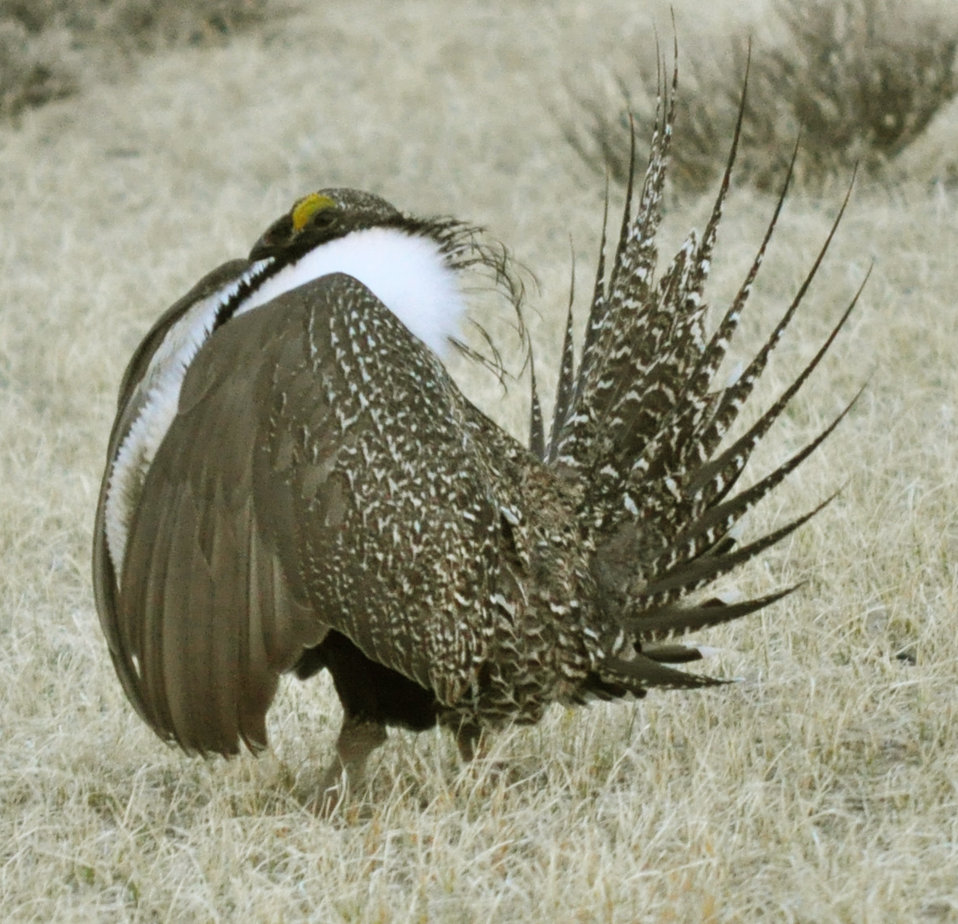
Male greater sage-grouse struts to attract females at a lek (breeding or dancing ground) near Bodie, California in April.